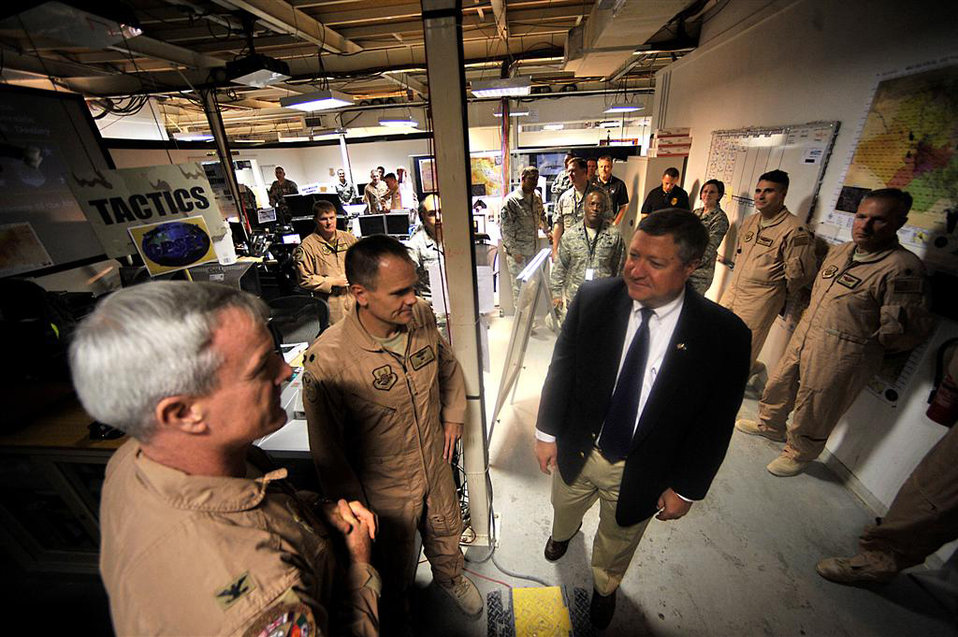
Secretary Donley visits the CAOC

Secretary of the Air Force Michael Donley tours the Combined Air and Space Operations Center Oct. 11. The secretary stopped at each division to receive a short review on airpower contributions to daily operations.